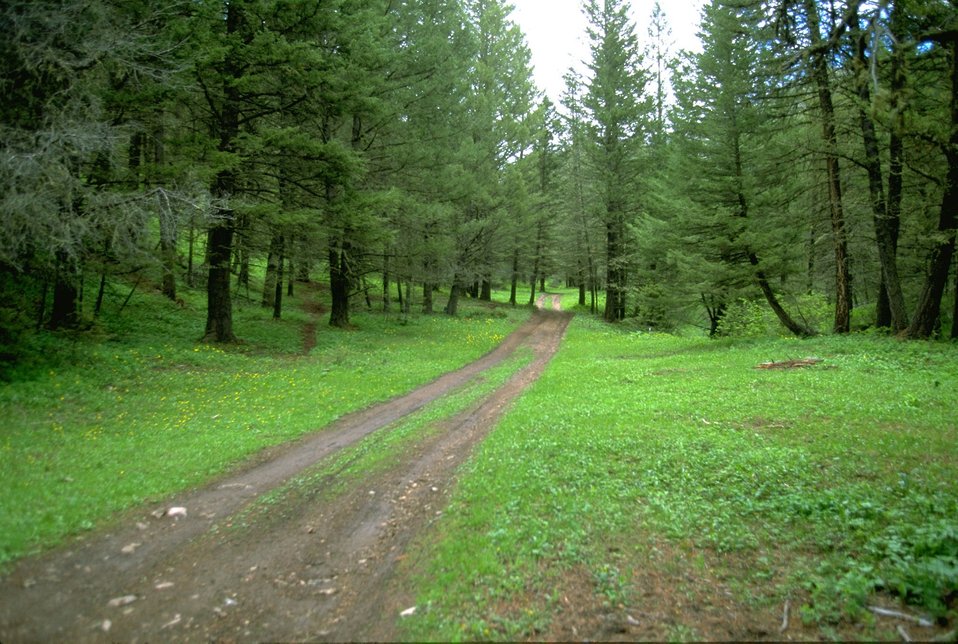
LimeKiln Canyon access road through the trees in the Judith Mountains